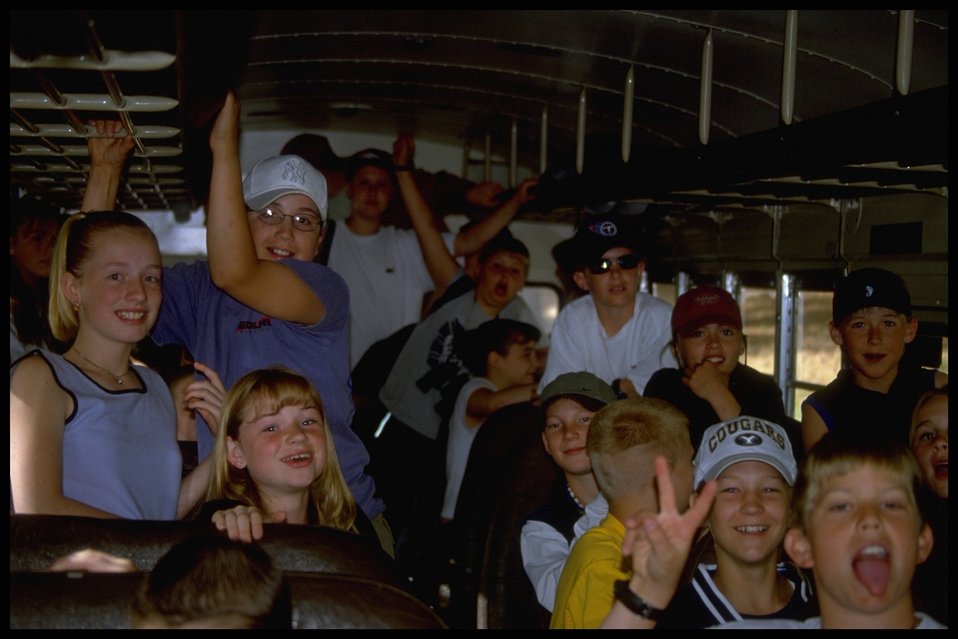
Lakeview District kids on "Neo Tropical Bird Day" field trip.